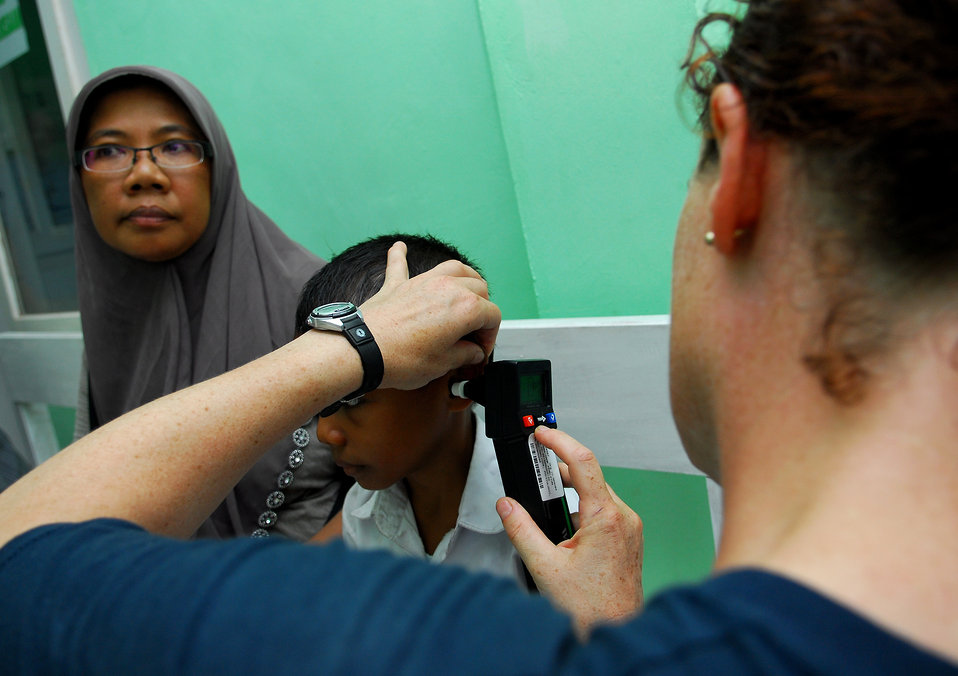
Lt. (Dr.) Anne Jarrett examines a child’s ear during a medical civic action program in Sulamadaha, Indonesia, on July 20, 2010. The Military Sealift Command hospital ship USNS Mercy (T-AH 19) is in the North Maluku Islands conducting Pacific Partnership 2010, the fifth in a series of annual U.S. Pacific Fleet endeavors conducted in Indonesia as a disaster relief exercise aimed at strengthening regional partnerships.